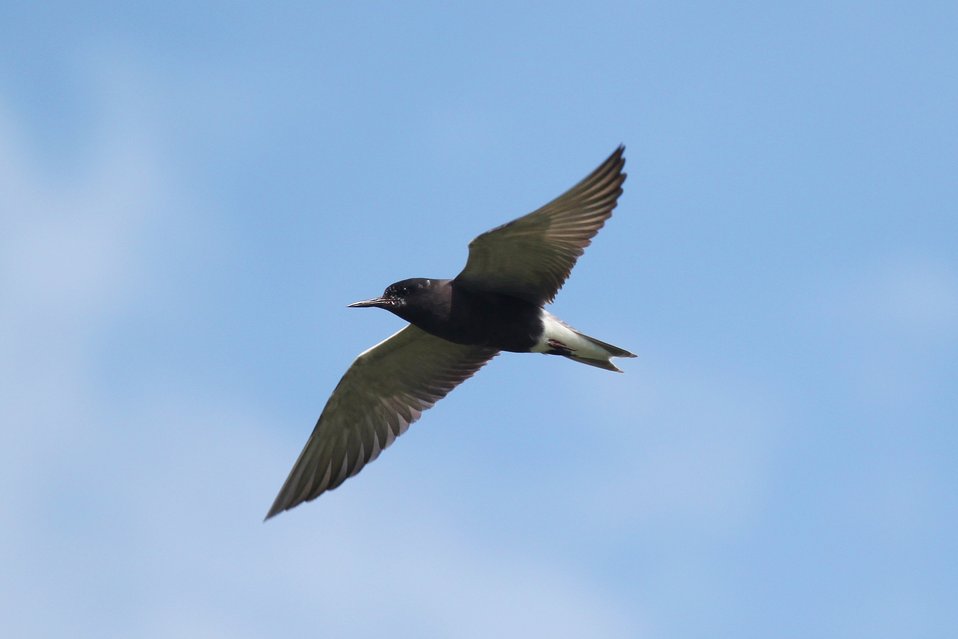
Black tern flying

Black tern photographed at Missisquoi National Wildlife Refuge